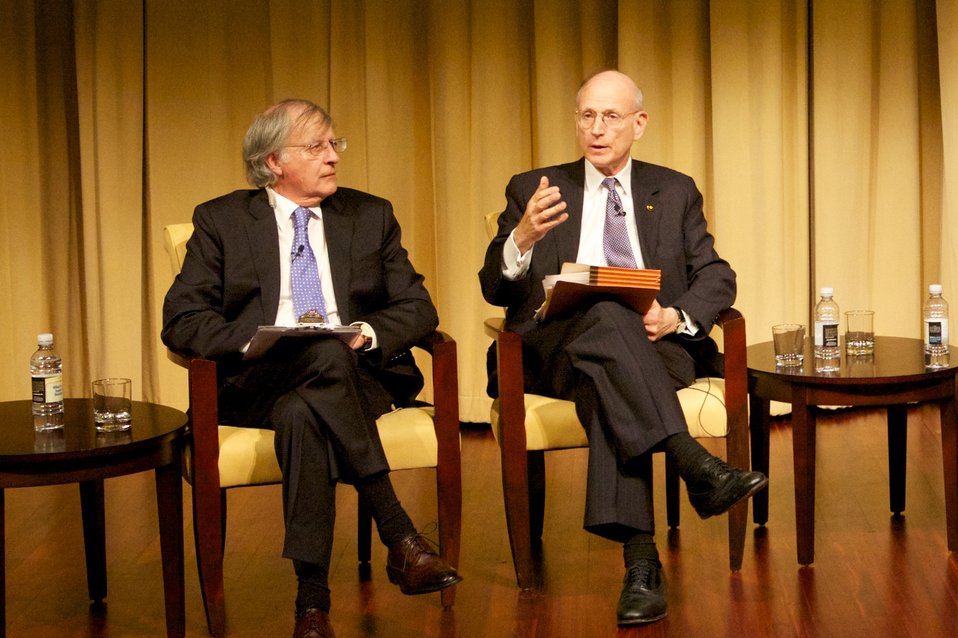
The Monuments Men; Greg Bradsher (left), archivist, moderates the discussion of Nazi looting and the Monuments, Fine Arts, and Archives section with Stuart E. Eizenstat (right), former Special Representative of the President and Secretary of State on Holocaust-Era Issues